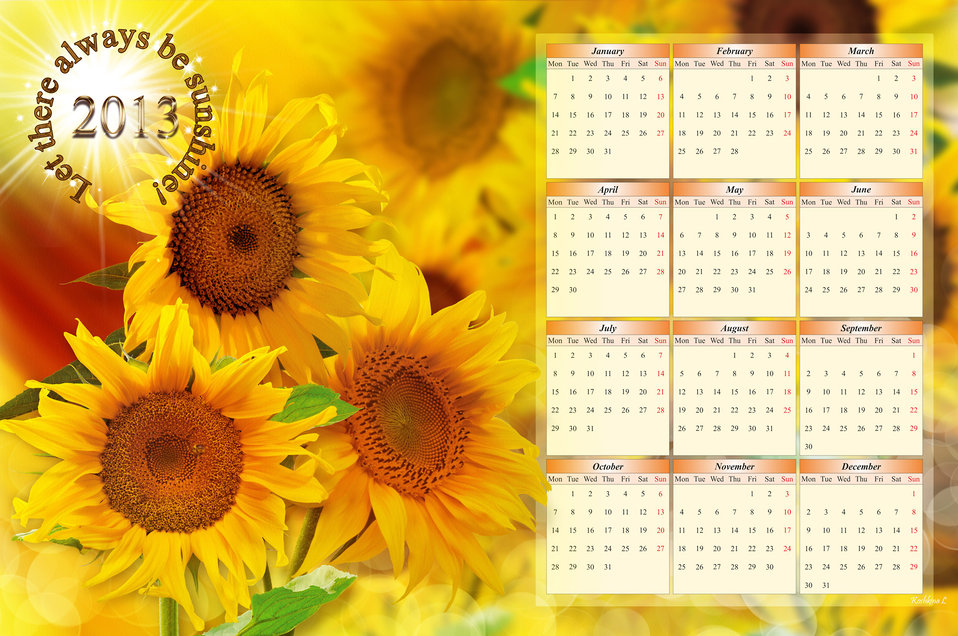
Calendar for 2013 with sunflowers.